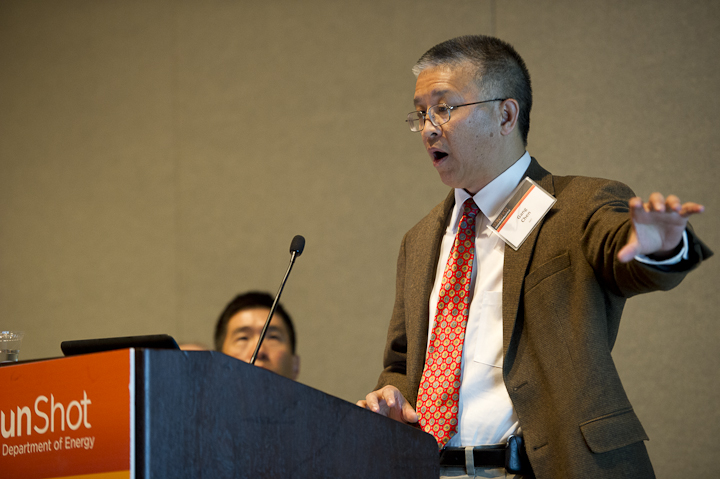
SunShot PV

June 13, 2012- Gang Chen speaks at PV break out session at the Technology Forum at the SunShot Grand Challenge Summit and Technology Forum in Denver, Colorado.